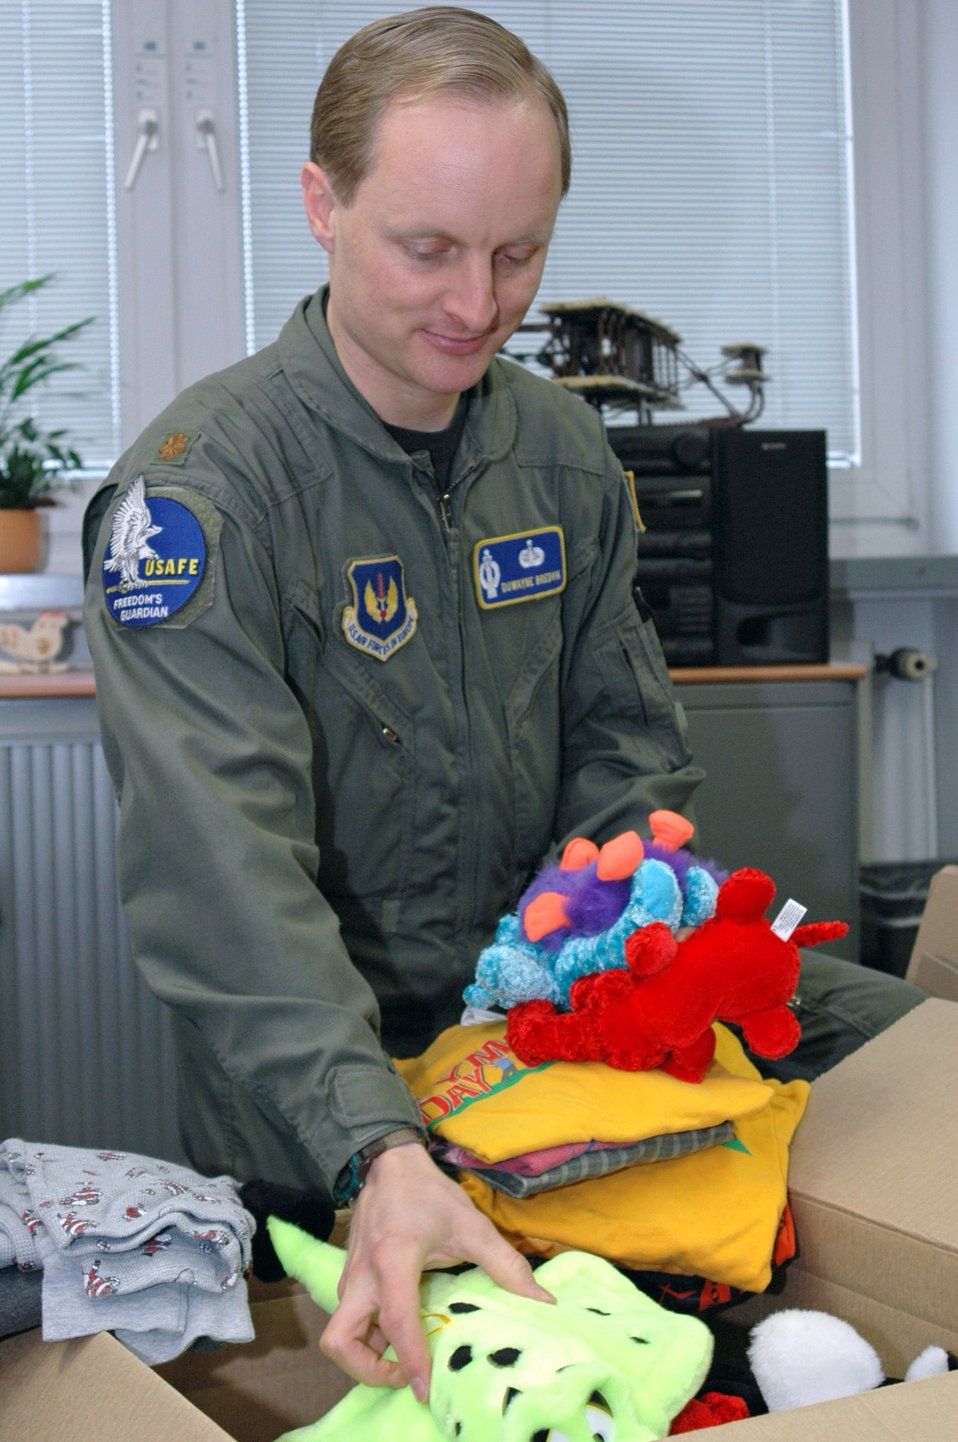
Airmen collect gifts for Afghan children

RAMSTEIN AIR BASE, Germany (AFPN) -- Maj. DuWayne Bredvik packs donated gifts being sent to schools and orphanages in Afghanistan. Major Bredvik is the chief of policy and doctrine for the U.S. Air Forces in Europe Plans and Programs Directorate.